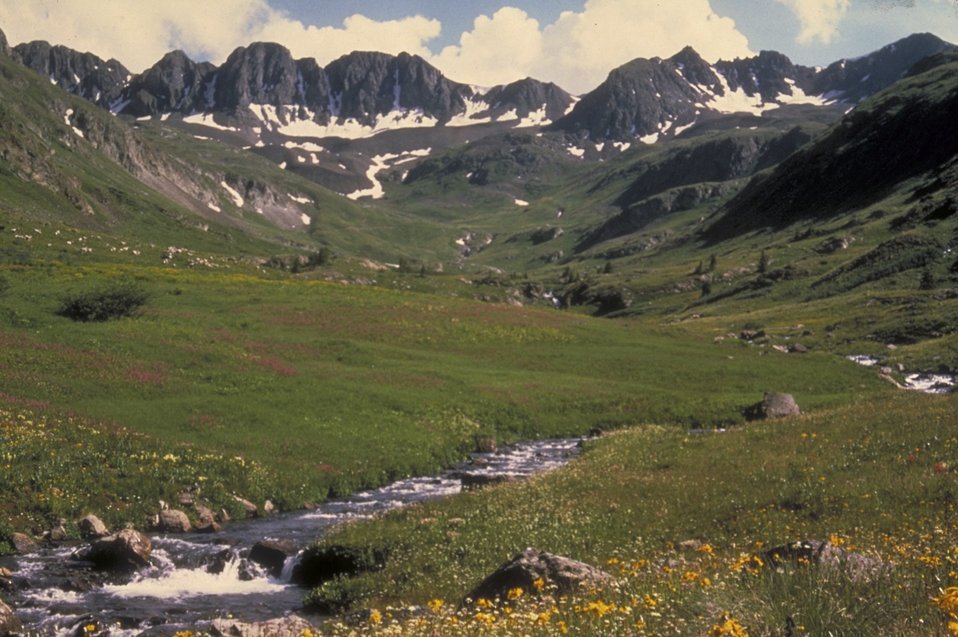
Back Country